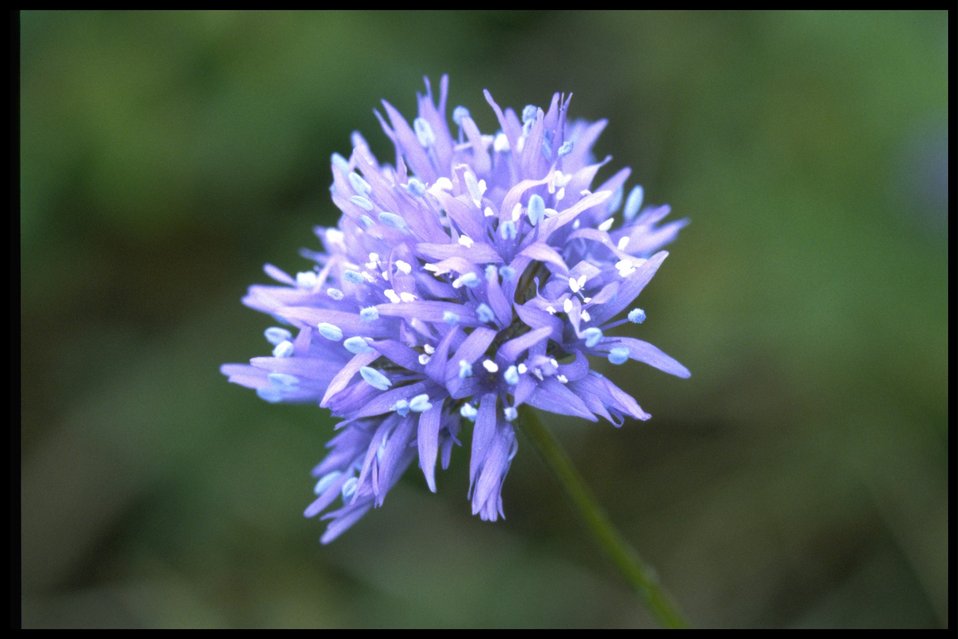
Closeup shot of Gilia (Ipomopsis) Capitata.